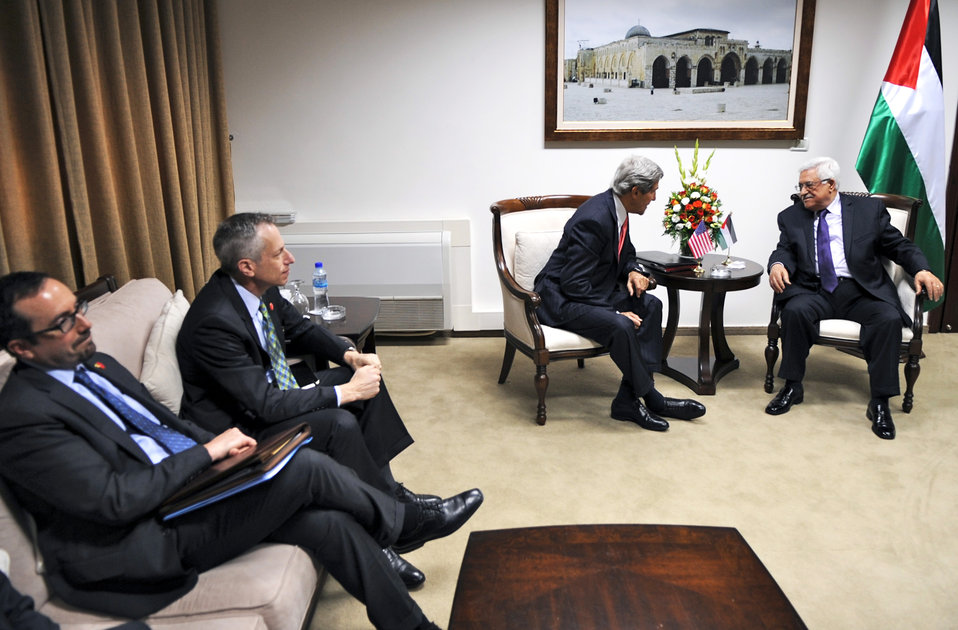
Secretary Kerry Meets With Palestinian President Abbas

U.S. Secretary of State John Kerry meets with Palestinian President Mahmoud Abbas in Ramallah on May 23, 2013.